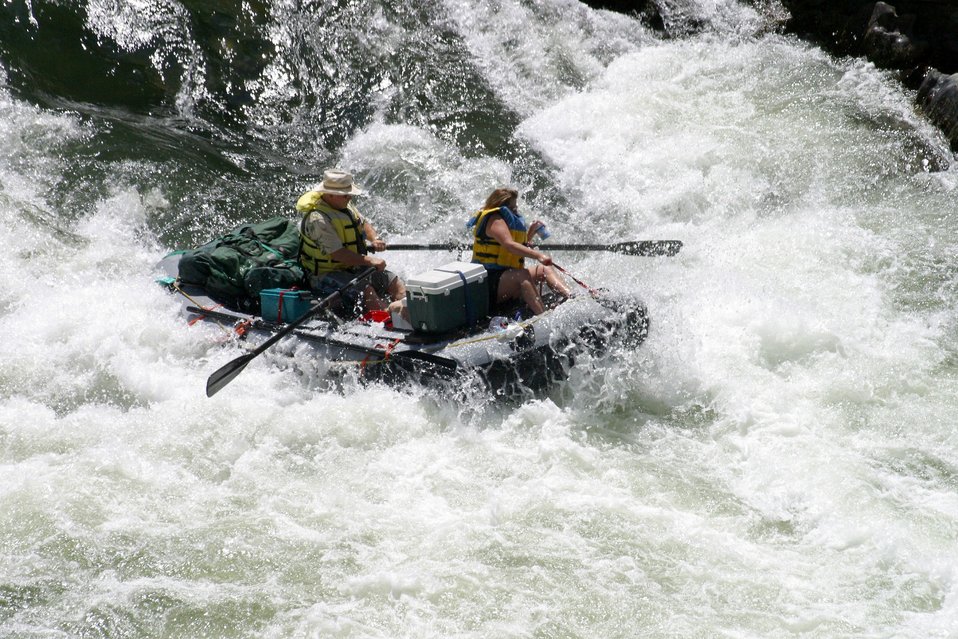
Boater at Grave Creek Falls